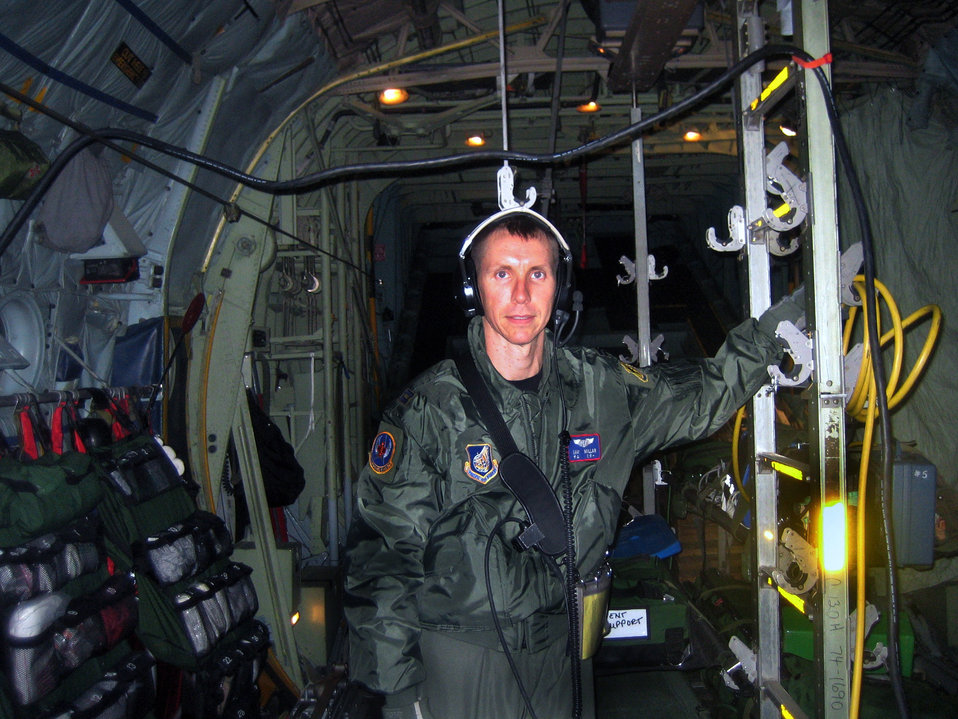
Airman gives aid at 37,000 feet

Capt. Sam Millar stands ready during a recent medical evacuation mission. Captain Millar was called upon to provide medical assistance during an Aug. 29 emergency aboard an Air Canada flight from Narita, Japan, to Toronto. He is assigned to the 18th Aeromedical Evacuation Branch.